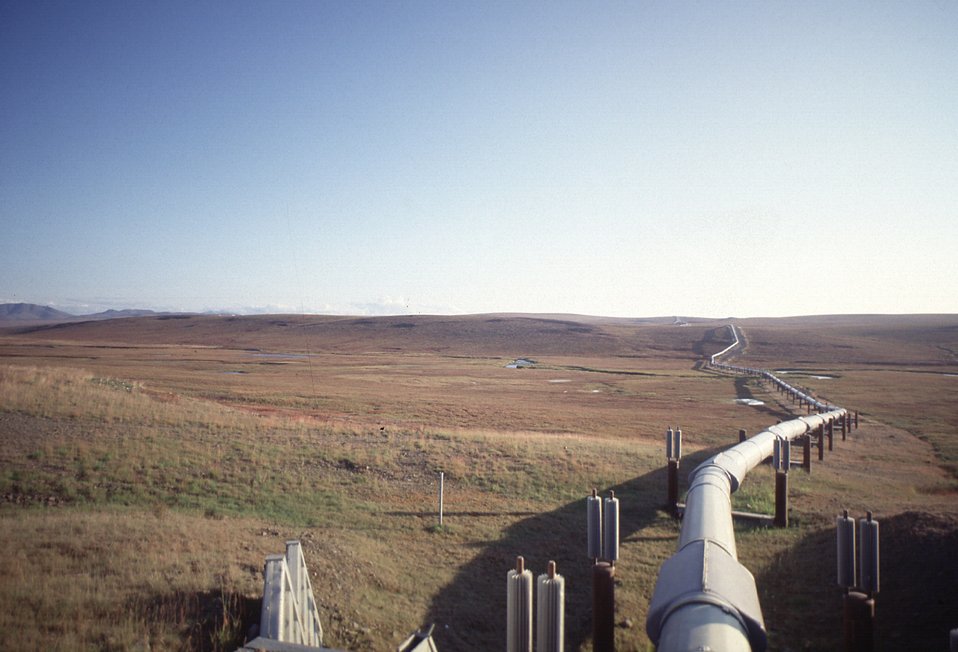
Trans-Alaska Pipeline, Dalton Highway